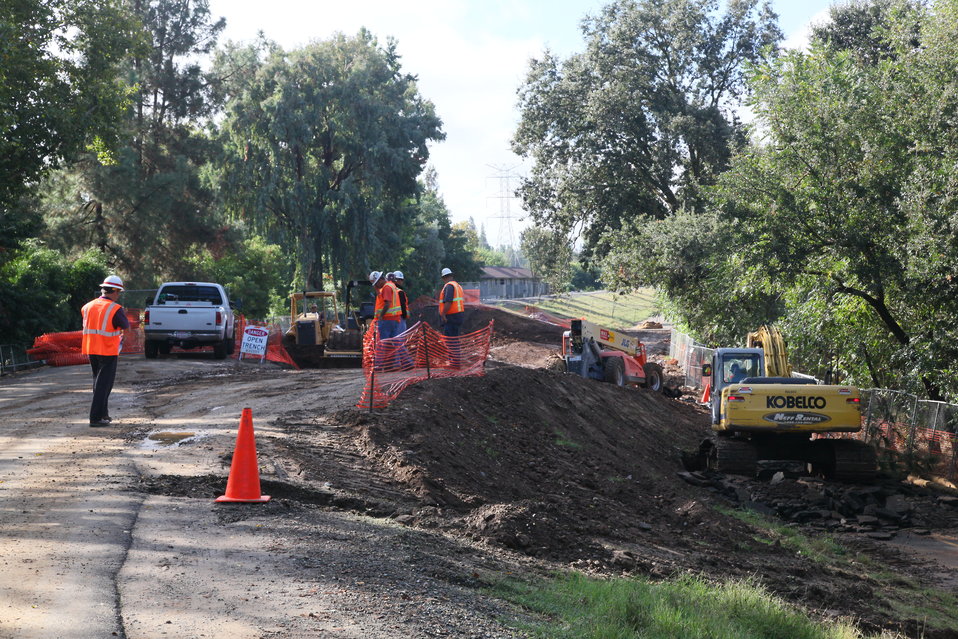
Oct. 11, 2011 American River Parkway Trail near the California State University-Sacramento campus

U.S. Army Corps of Engineers Sacramento District contractors continue construction of a levee seepage barrier along the American River Parkway Trail near the California State University-Sacramento campus, shown Oct. 11, 2011.